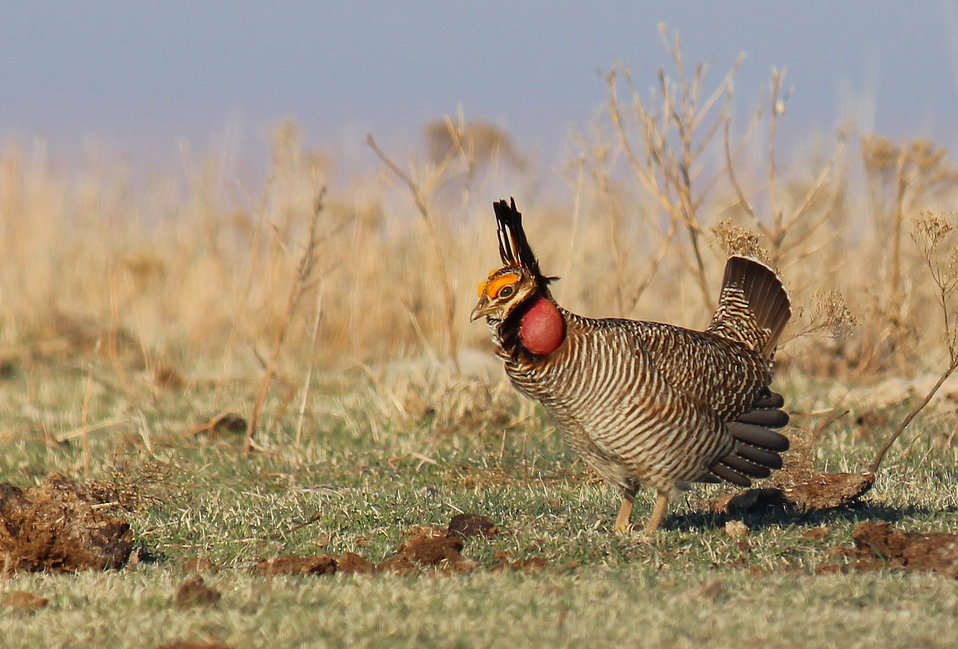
Lesser Prairie-Chicken

PFW program work in Kansas has assisted in stabilizing lesser prairie-chicken populations.